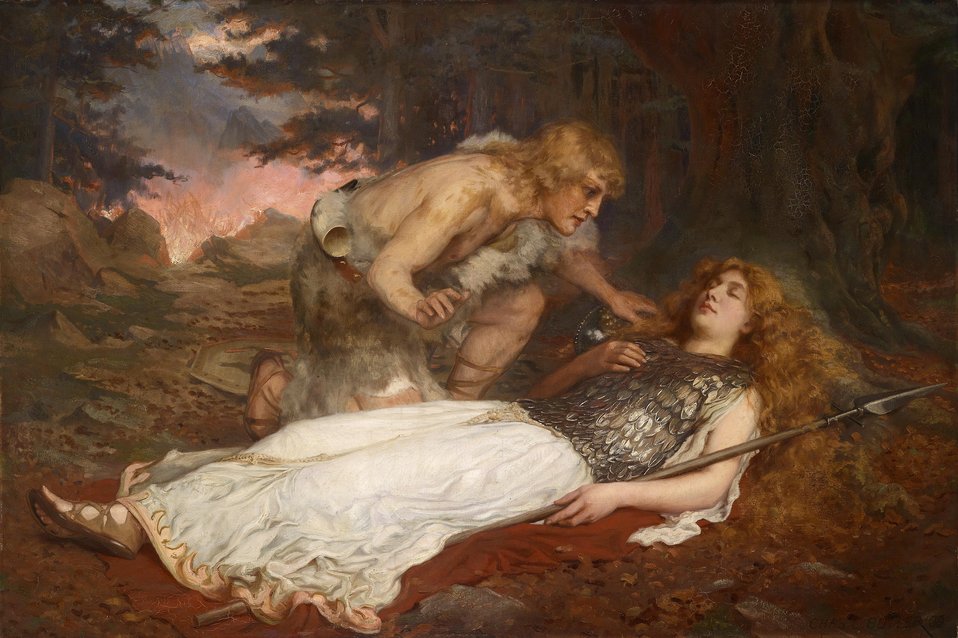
Charles Ernest Butler Siegfried und Brunnhilde